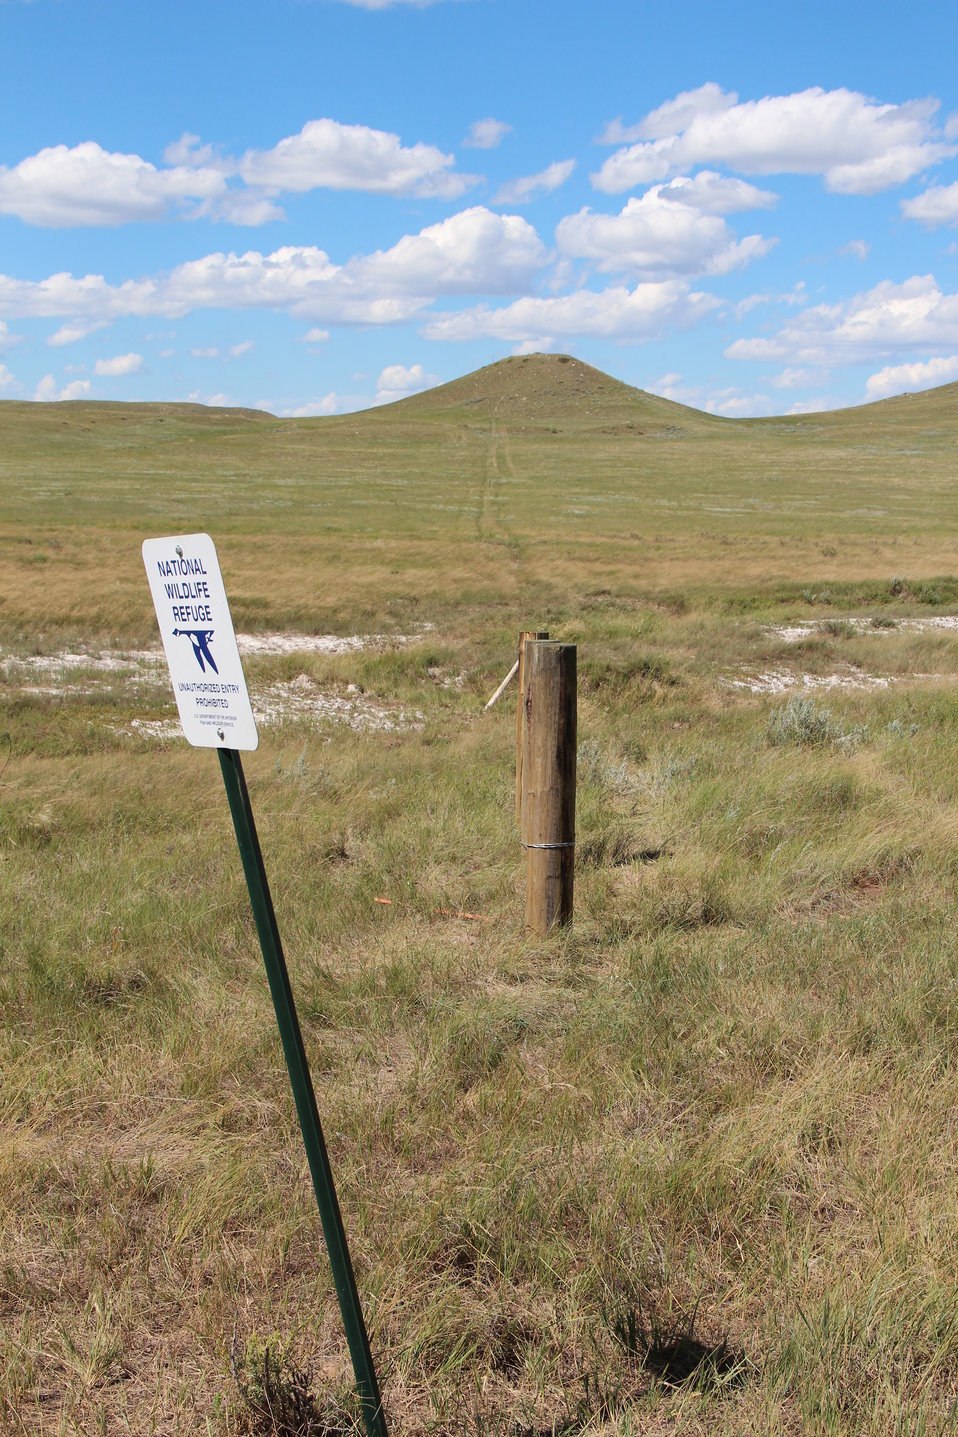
Hewitt Lake NWR

Constructing boundary fence on the Hewitt Lake NWR.